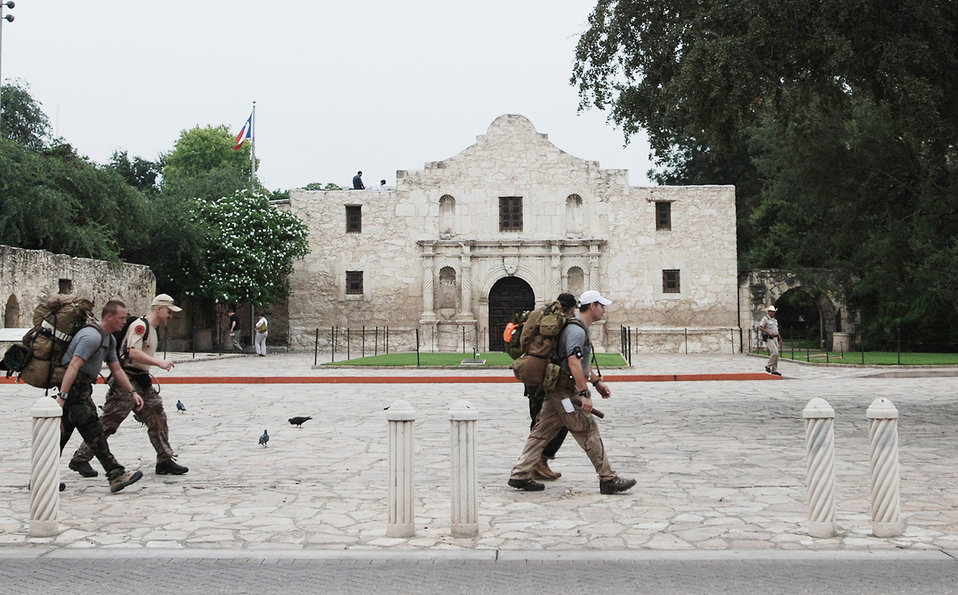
Air Force combat controllers march in memory of fallen brethren

Air Force combat controllers pass through downtown San Antonio as they march more than 800 miles from Lackland Air Force Base, Texas, to Hurlburt Field, Fla., in 11 days. They are marching to honor 12 special tactics Airmen who died in Iraq and Afghanistan.